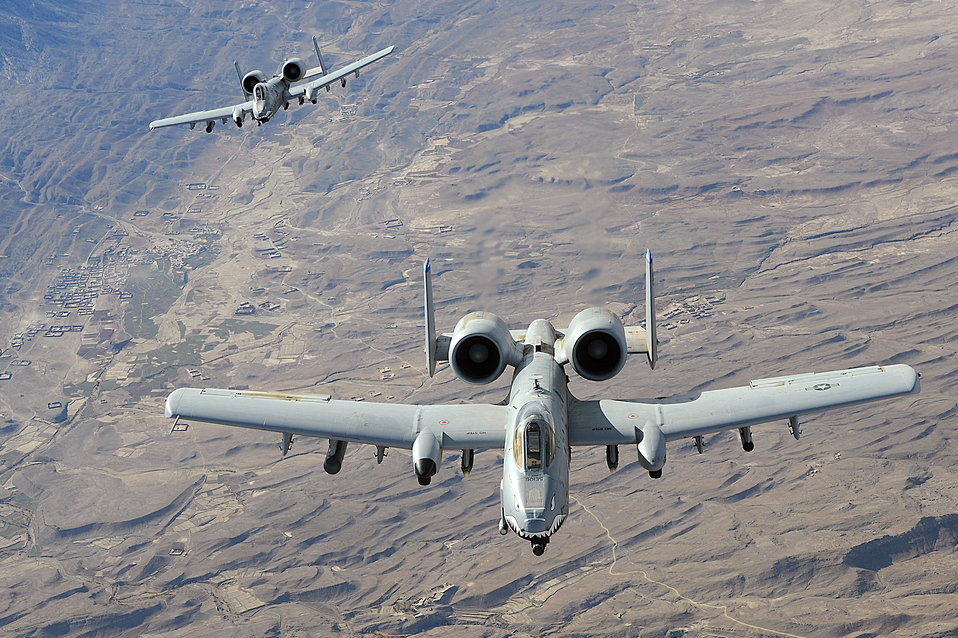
Jan. 29 airpower summary: A-10s relieve friendly forces

Two A-10 Thunderbolt IIs in-flight over Afghanistan supporting coalition forces. A-10s performs shows of force to deter enemy activities and provide armed aerial overwatch in support of Operation Enduring Freedom.